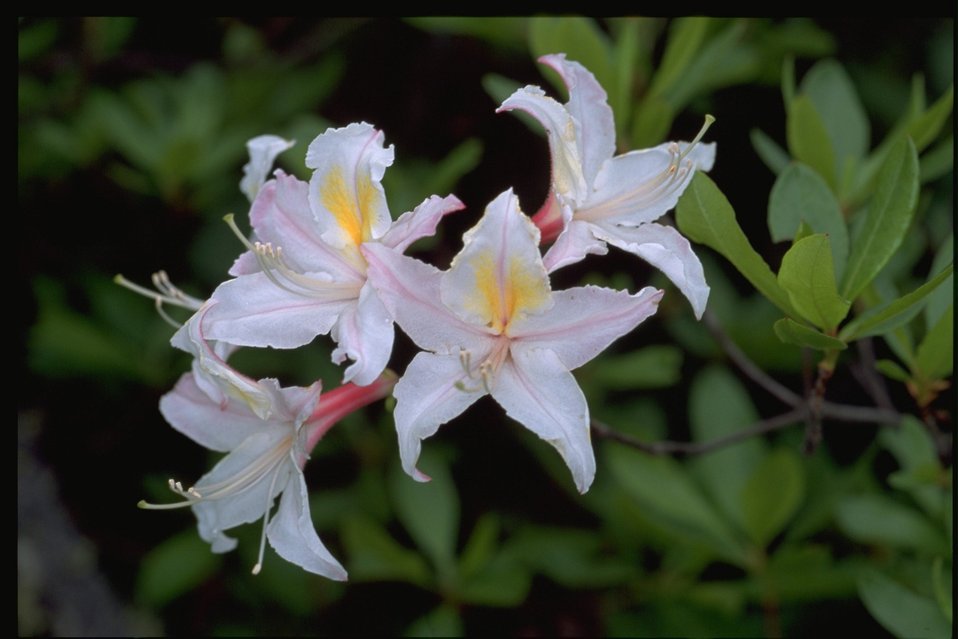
Medium shot of Rhodedendron occidentale.